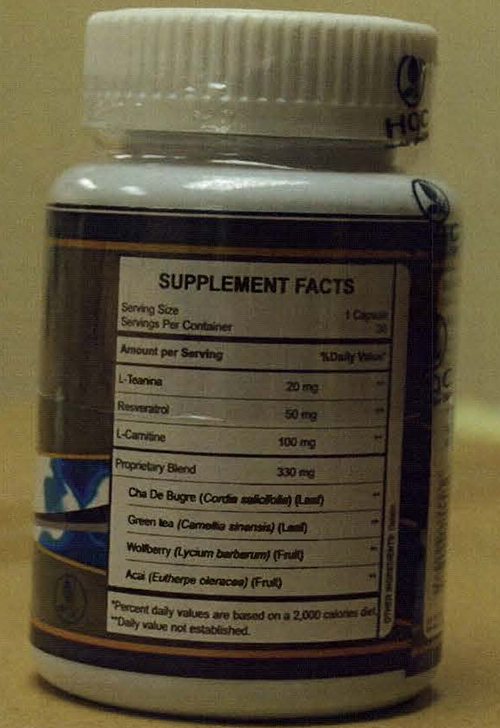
RECALLED – Dietary Supplement

August 16, 2013 – Product Recall – Herbal Give Care LLC Issues Voluntary Nationwide Recall of Esbelder Man Capsules, Esbelder Fem Capsules, and Esbelder Siloutte Capsules Vitamin Supplements Due to Potential Health Risks.